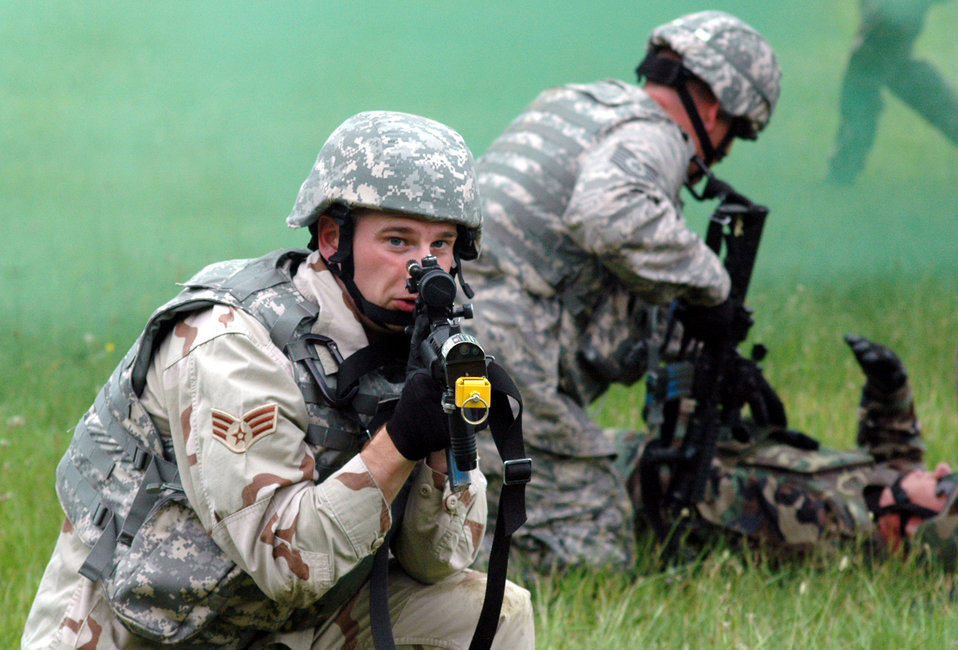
U.S. Air Force Expeditionary Center: Phoenix Warrior Training Course

A student in the Air Force Phoenix Warrior Training Course provides security while another looks after a victim during training in a combat first aid class June 5 at Fort Dix, N.J. The course is taught by members of the Air Force Expeditionary Center's Expeditionary Operations School and 421st Combat Training Squadron and prepares Airmen for upcoming deployments. Annually, the course trains more than 23,000 students in expeditionary- and mobility air force-based courses both with in-residence and distance learning.